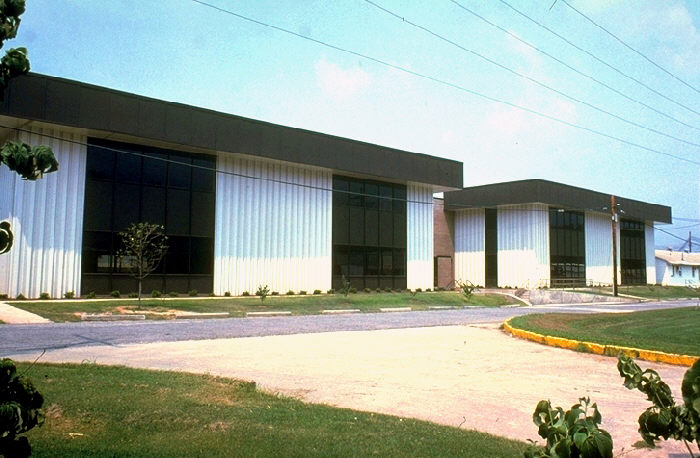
This was one of the Centers for Disease Control and Prevention (CDC) Chamblee, Georgia buildings.